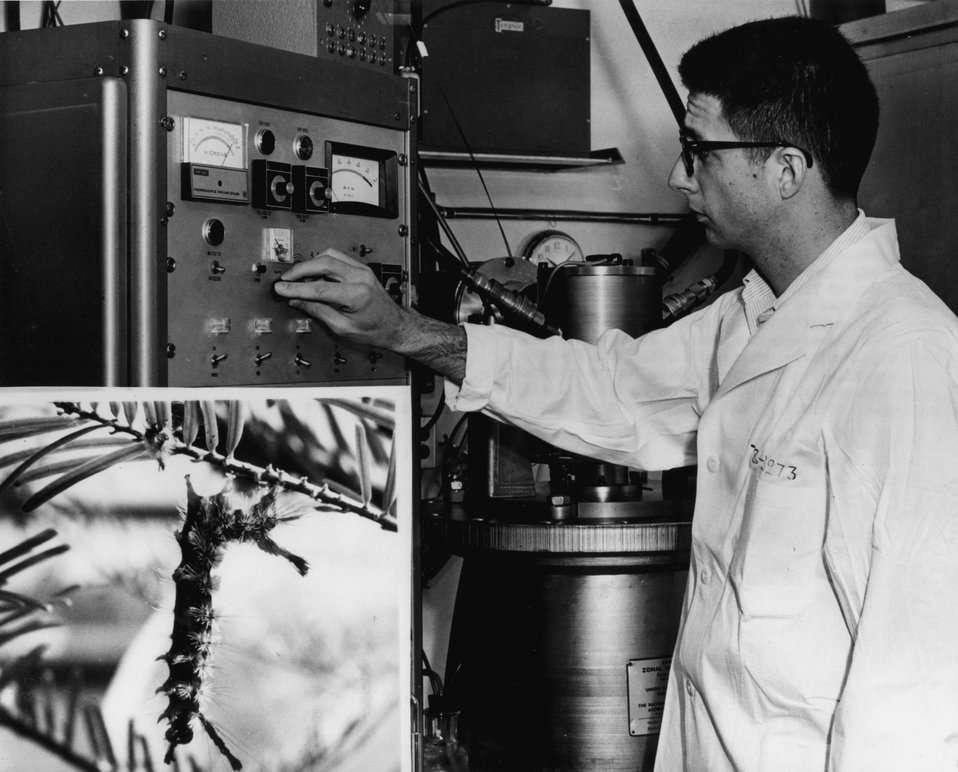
VIRUSES FOR KILLING INSECT PESTS...A biochemist with the Molecular Anatomy Program at the U.S. Atomic Energy Commission facilities in Oak Ridge, Tennessee, Dr. Julian Breillatt, operates a zonal centrifuge to purify virus material for use by the U.S. Forest Service in a research program to produce viral insecticides. c. 1972